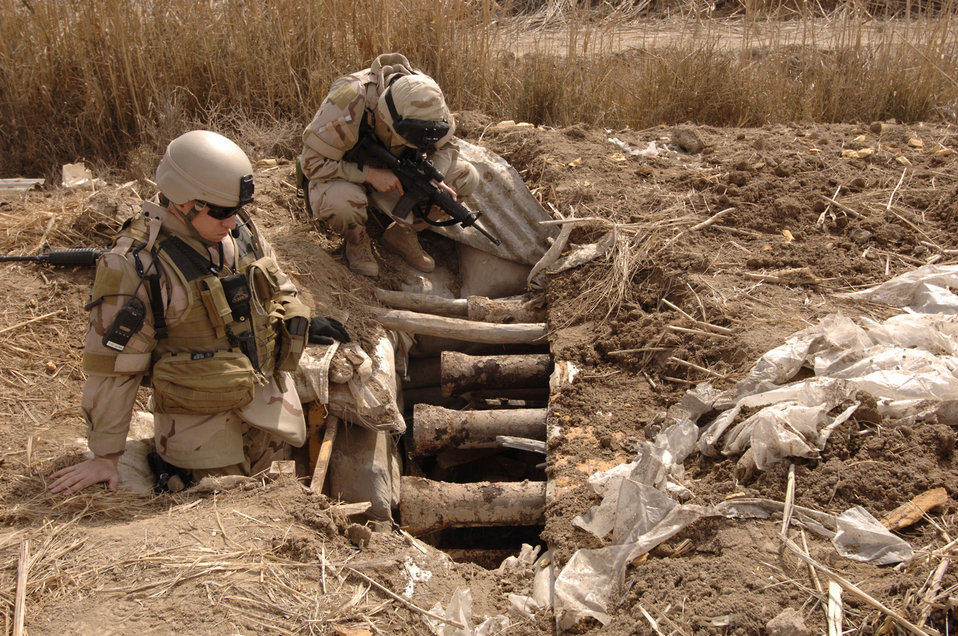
Bunker cleaning

CAMP VICTORY, Iraq (AFPN) -- Airmen with the 447th Explosive Ordnance Disposal Flight team enter an Iraqi bunker to inventory and clear all ordnance Feb. 20.